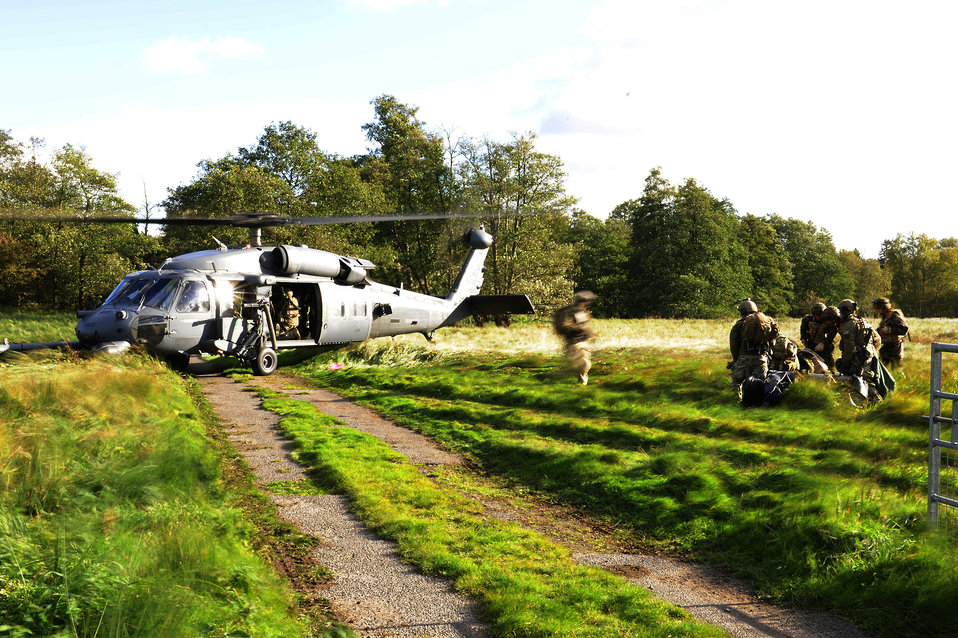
Subsurface recovery exercise

The crew of an HH-60G Pave Hawk helicopter stands by as pararescuemen assist wounded servicemembers during an exercise Oct. 20, 2010, at Stanford Training Area, England. The role of the 56th Rescue Squadron was to provide underwater recovery capability to British ground forces preparing to deploy to Afghanistan. Once the underwater recovery was complete, the 56th RQS also provided medical and casualty evacuation support.